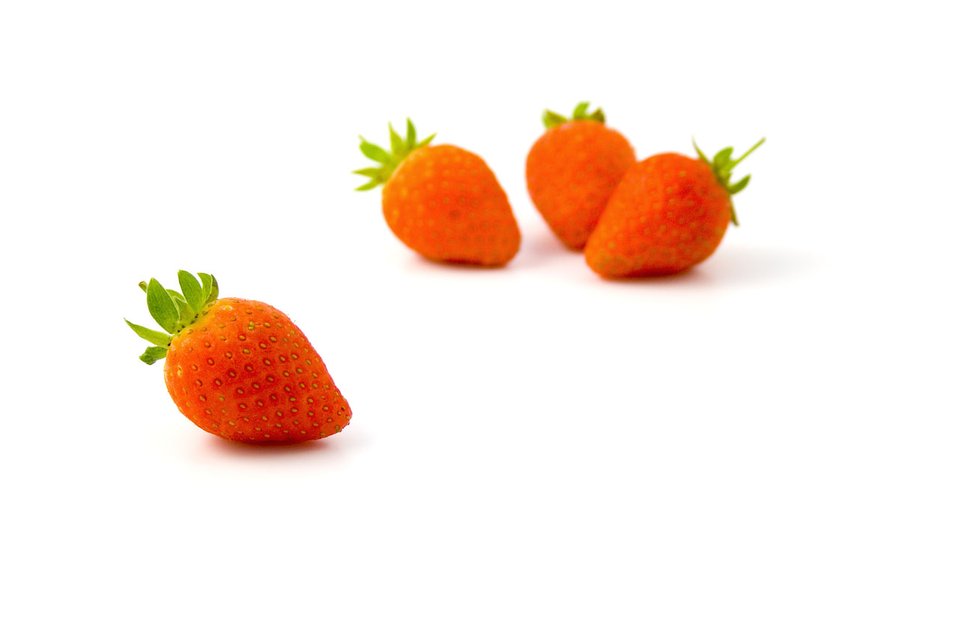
Strawberries

Four strawberries on white background.